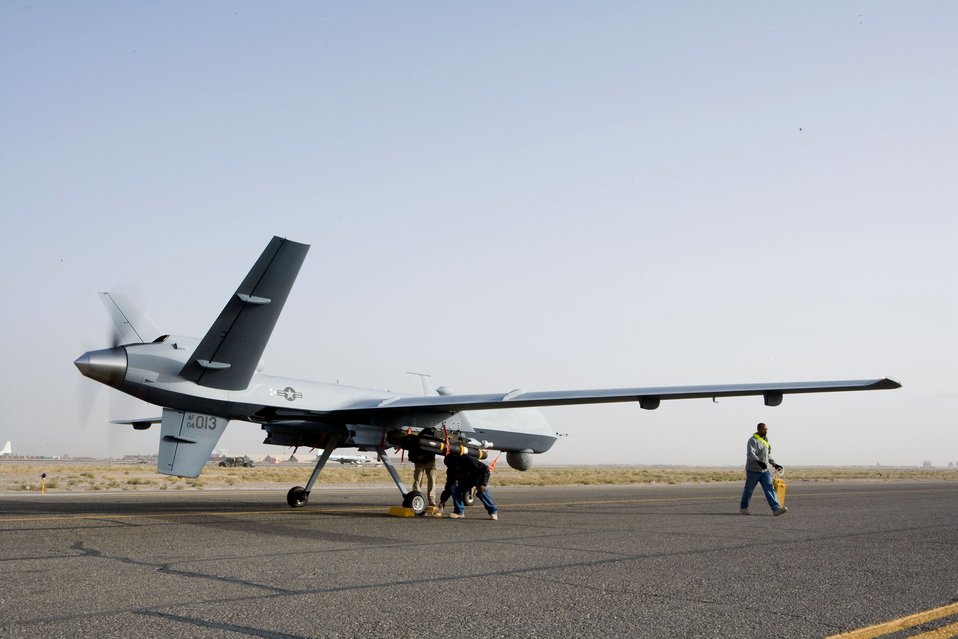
Air Force's hunter-killer UAV now flying in Afghanistan

Aircrews perform a preflight check on an MQ-9 Reaper before it takes off for a mission in Afghanistan. The Reaper is larger and more heavily-armed than the MQ-1 Predator and in addition to its traditional ISR capabilities, is designed to attack time-sensitive targets with persistence and precision.